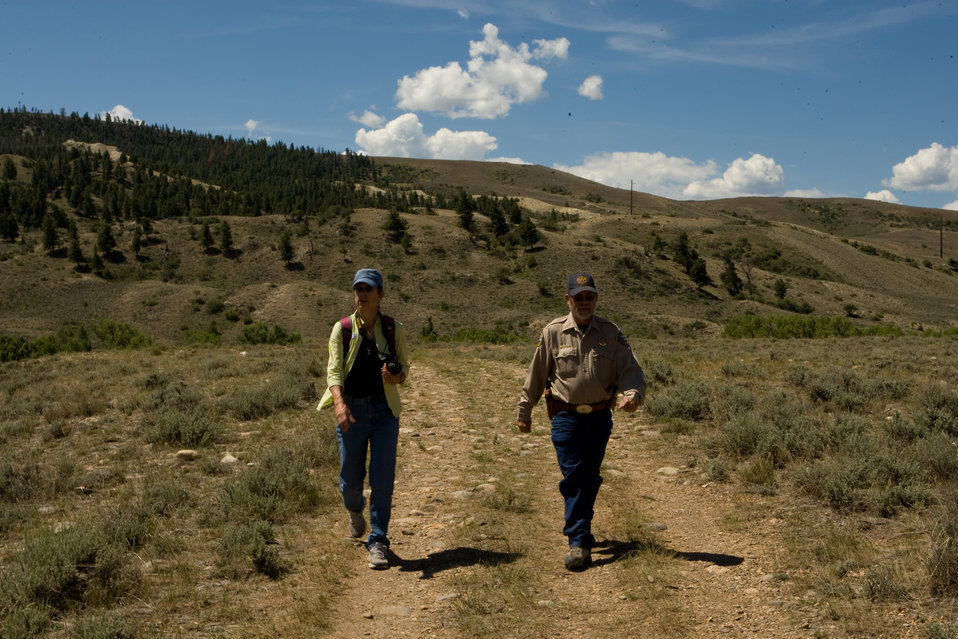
Colorado Rare Plant Conservation Initiative

The Colorado Rare Plant Conservation Initiative (RPCI) is a partnership of 23 statewide and regional agencies, private organizations, and academic institutions working to conserve 121 rare plants in Colorado. As part of these efforts the group developed the Colorado Rare Plant Conservation Strategy, developed Best Management Practices to reduce energy development impacts, addressed climate change, and developed focused strategies for the conservation of individual species at eight priority landscapes. The group has also worked to coordinate volunteer efforts for plant conservation across the state.